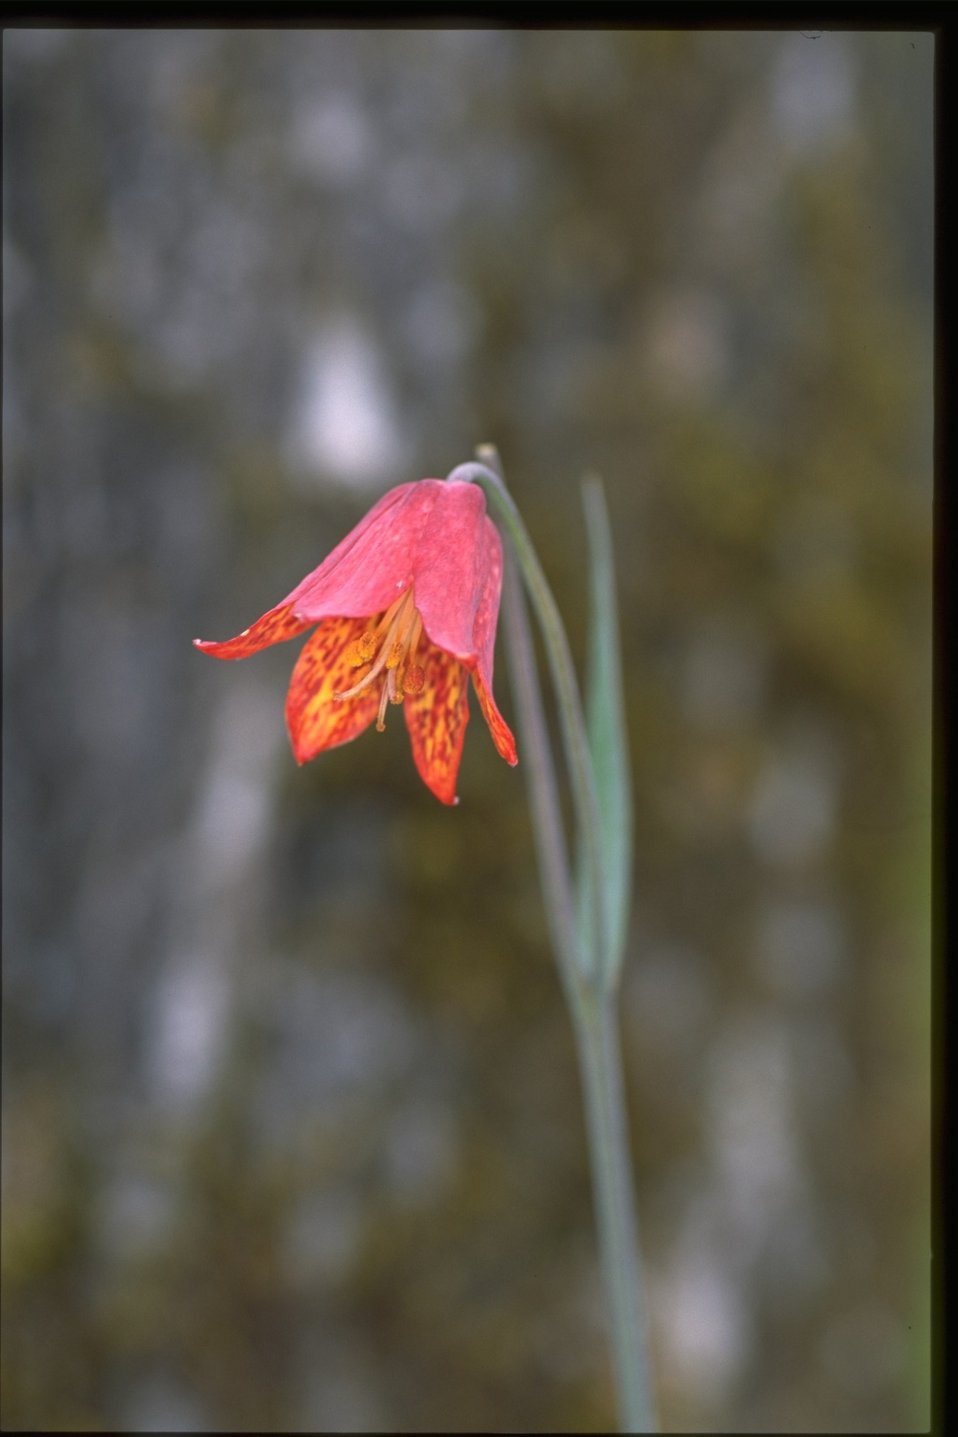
Closeup shot of Gentner's Fritillary, Fritillaria gentneri.